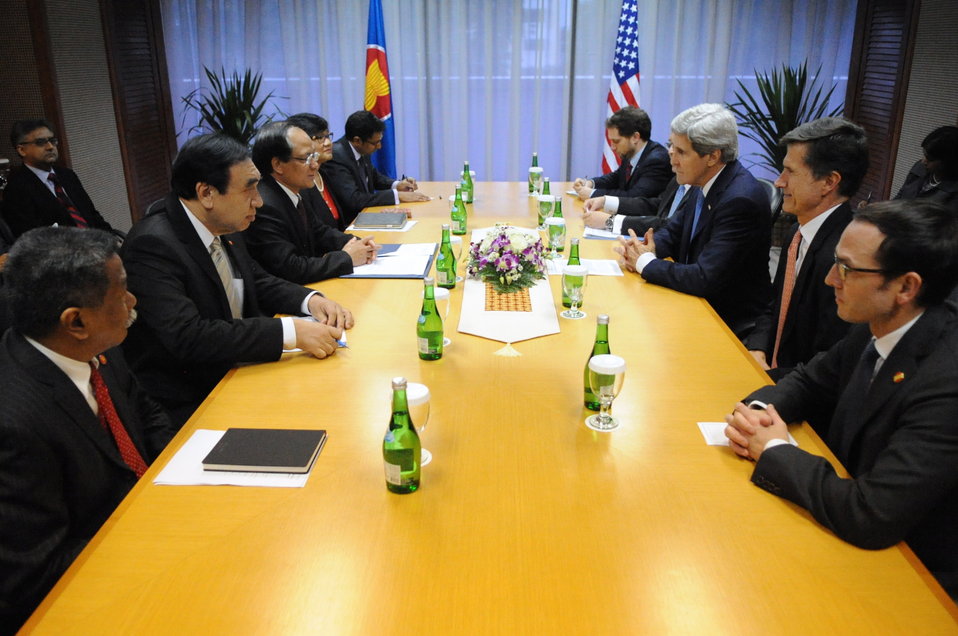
Secretary Kerry Meets With ASEAN Secretary-General Minh in Jakarta

U.S. Secretary of State John Kerry and ASEAN Secretary-General Le Luong Minh meet in Jakarta, Indonesia, on February 16, 2014.